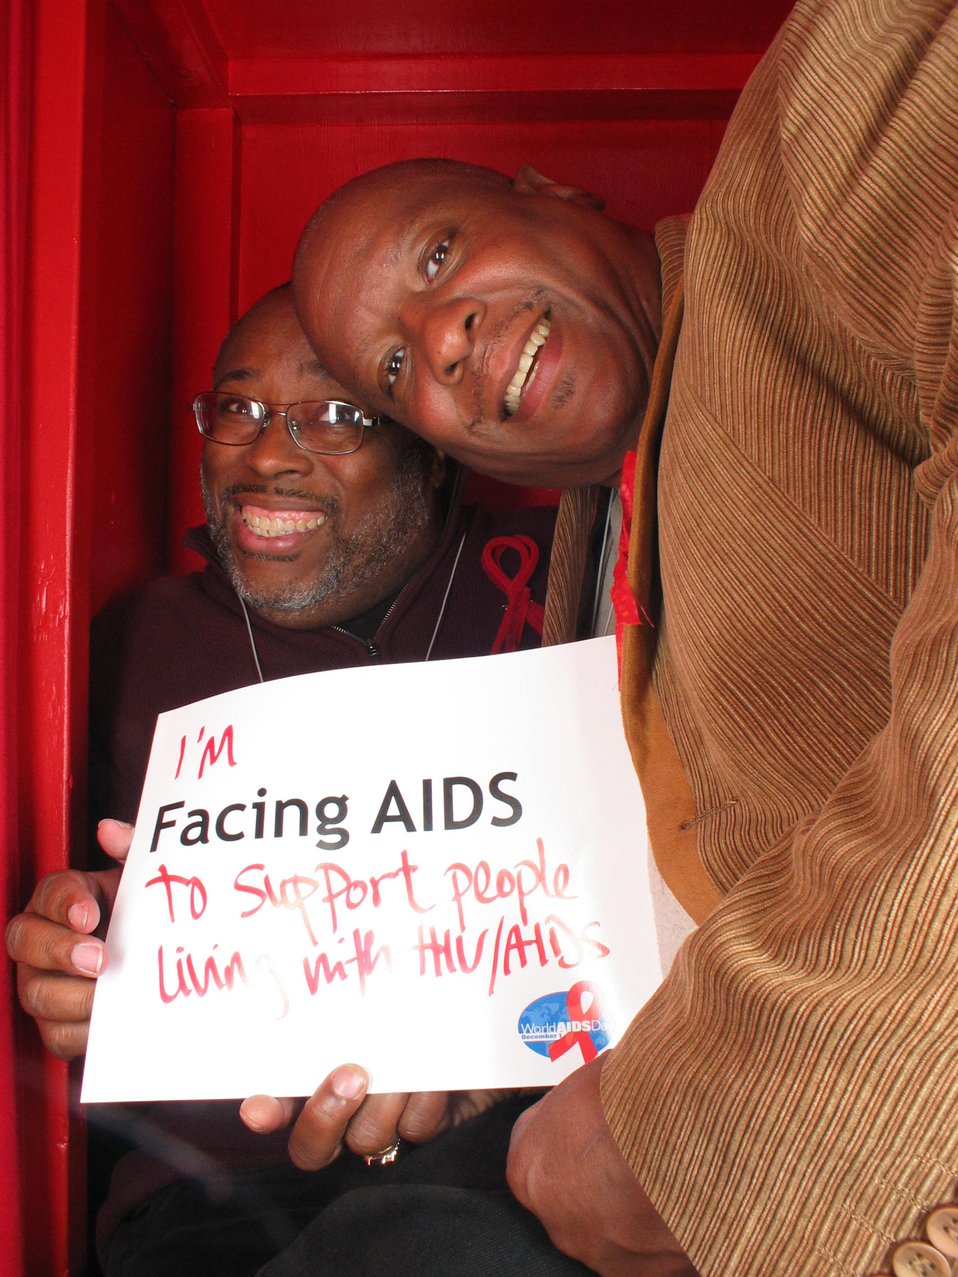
I'm Facing AIDS to support people living with HIV/AIDS